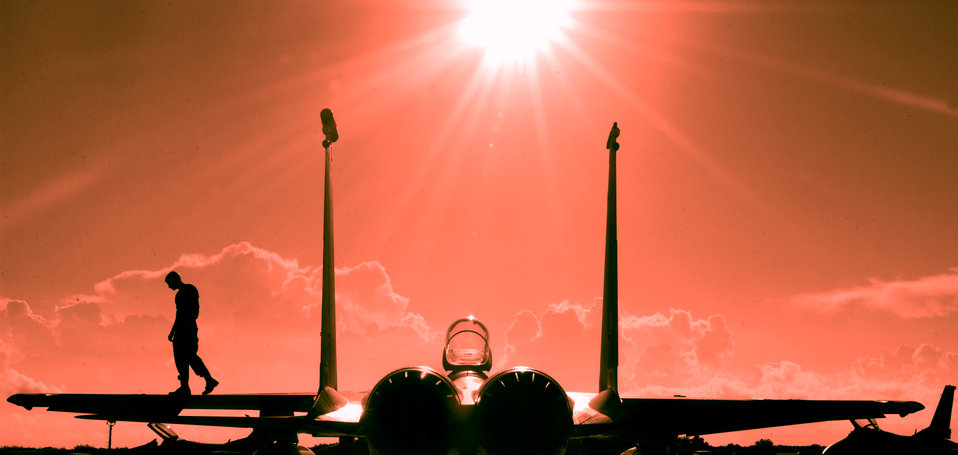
Silhouette of a crew chief walking on the wing of an F-15

KEY WEST, Fla. -- A crew chief from the 159th Air National Guard, LA maintenance crew preflights a F-15 fighter jet on Oct. 23, 2002 for Exercise Cope Snapper 2002. Held at NAS Key West Florida, Exercise Cope Snapper 02 is a multi-aircraft exercise that engages dissimilar air combat training with on fighter data link and joint operations with the Navy. The members involved in Cope Snapper consist of the 159th Fighter Wing's, Louisiana F-15 fighters, the 169th McEntire, SC Air National Guard's F-16 fighter jets, maintenance crews, and the Navy's F-18s and F-14 fighter jets.